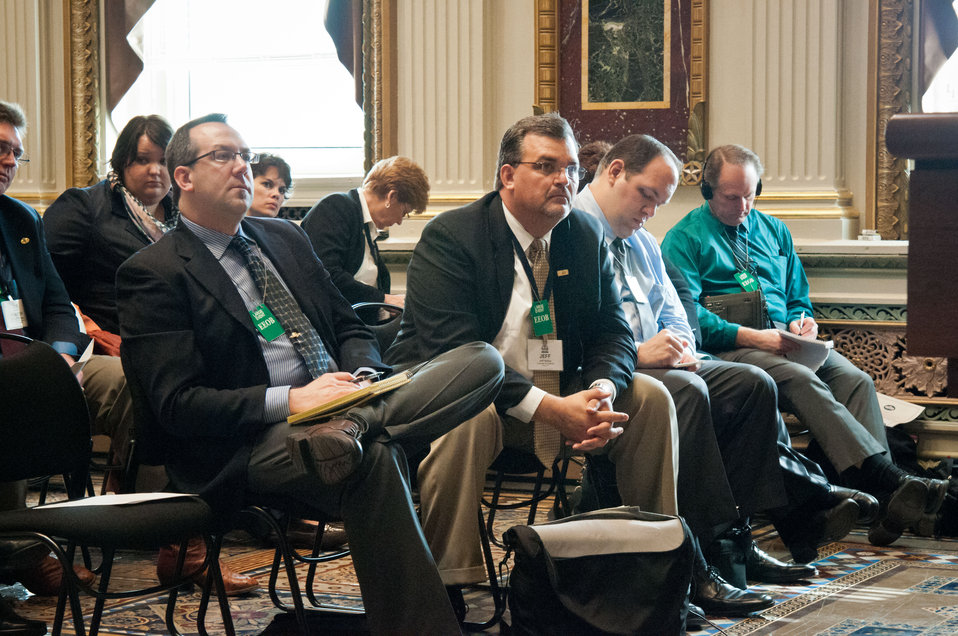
Tom Cassidy, Ag Radio Network, Utica, New York, Jeff Nalley, Cromwell Ag Network, Utica, Kentucky, Andy Vance, Feedstuffs, Reynoldsburg, Ohio, Pam Jahnke-Welch, WTDY, Madison, Wisconsin and Gary Crawford, U.S. Department of Agriculture Radio listen to Agriculture Secretary Tom Vilsack, United States Department of Agriculture officials and Obama Administration officials at the Spring National Association of Farm Broadcasters (NAFB), “Washington Watch” member retreat in Washington, D.C. This year the meeting was held in the Eisenhower Executive Office Building, Indian Treaty Room on Tuesday, April 24, 2012, featuring United Sates Department of Agriculture and Obama Administration officials. This opportunity provides an occasion to highlight efforts to rebuild and revitalize rural America, including efforts for the agricultural community. NAFB is the recognized and trusted source of agricultural and rural lifestyle information for America with approximately 200 members who broadcast via radio in nearly every state in the country.